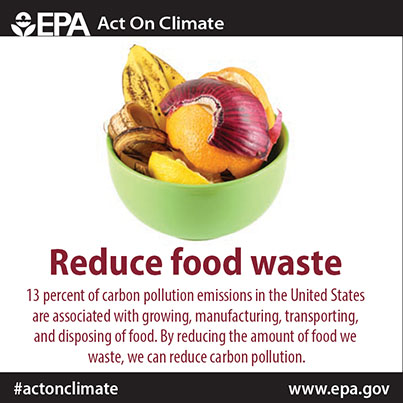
Reduce food waste

Make haste, reduce your food waste to #ActOnClimate!